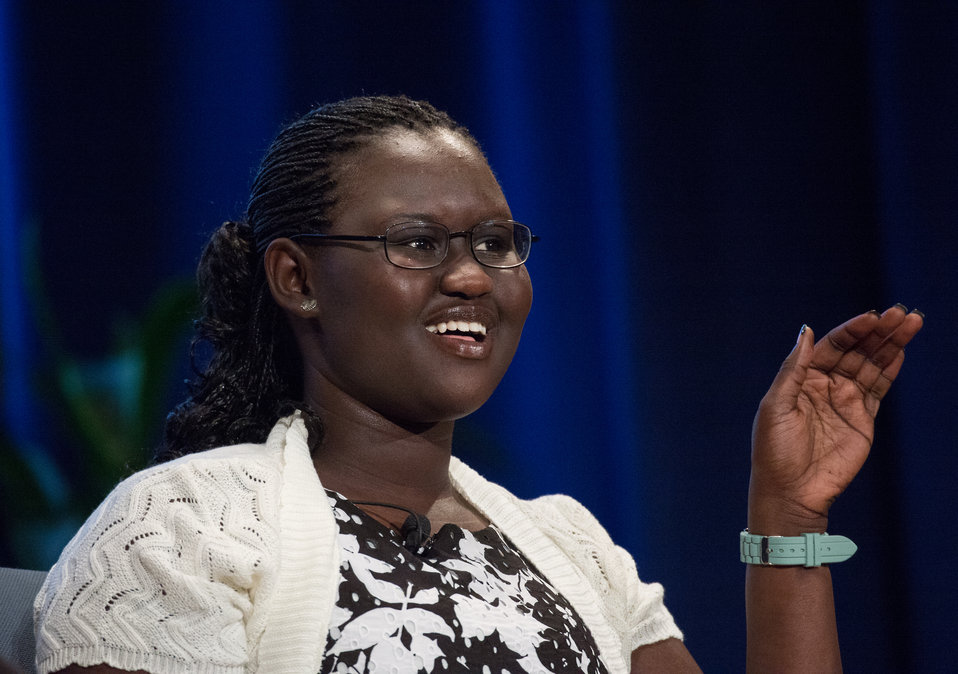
Binghamton, NY high school student Nosa Akol, participates in the discussion panel titled 'I am Dr. Borlaug's Vision - I Can Make a Difference'; during the Borlaug Symposium commemorating the late Dr. Norman E. Borlaug's 100th Birthday hosted by the U. S. Department of Agriculture (USDA) in the Jefferson Auditorium of at USDA in Washington, D.C. on Tuesday, Mar. 25, 2014. The symposium highlighted current efforts addressing global hunger.